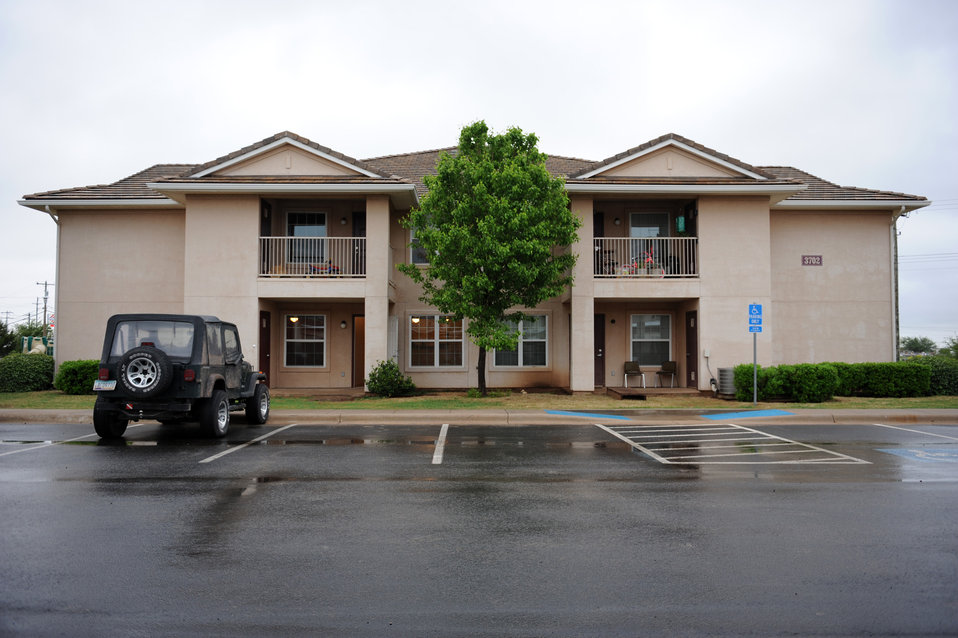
Dyess offers specialized housing through privatization

One of the apartment home buildings at Quail Hollow complex, a housing privatization project at Dyess Air Force Base, Texas. The complex has 402 units for Airmen and their families.